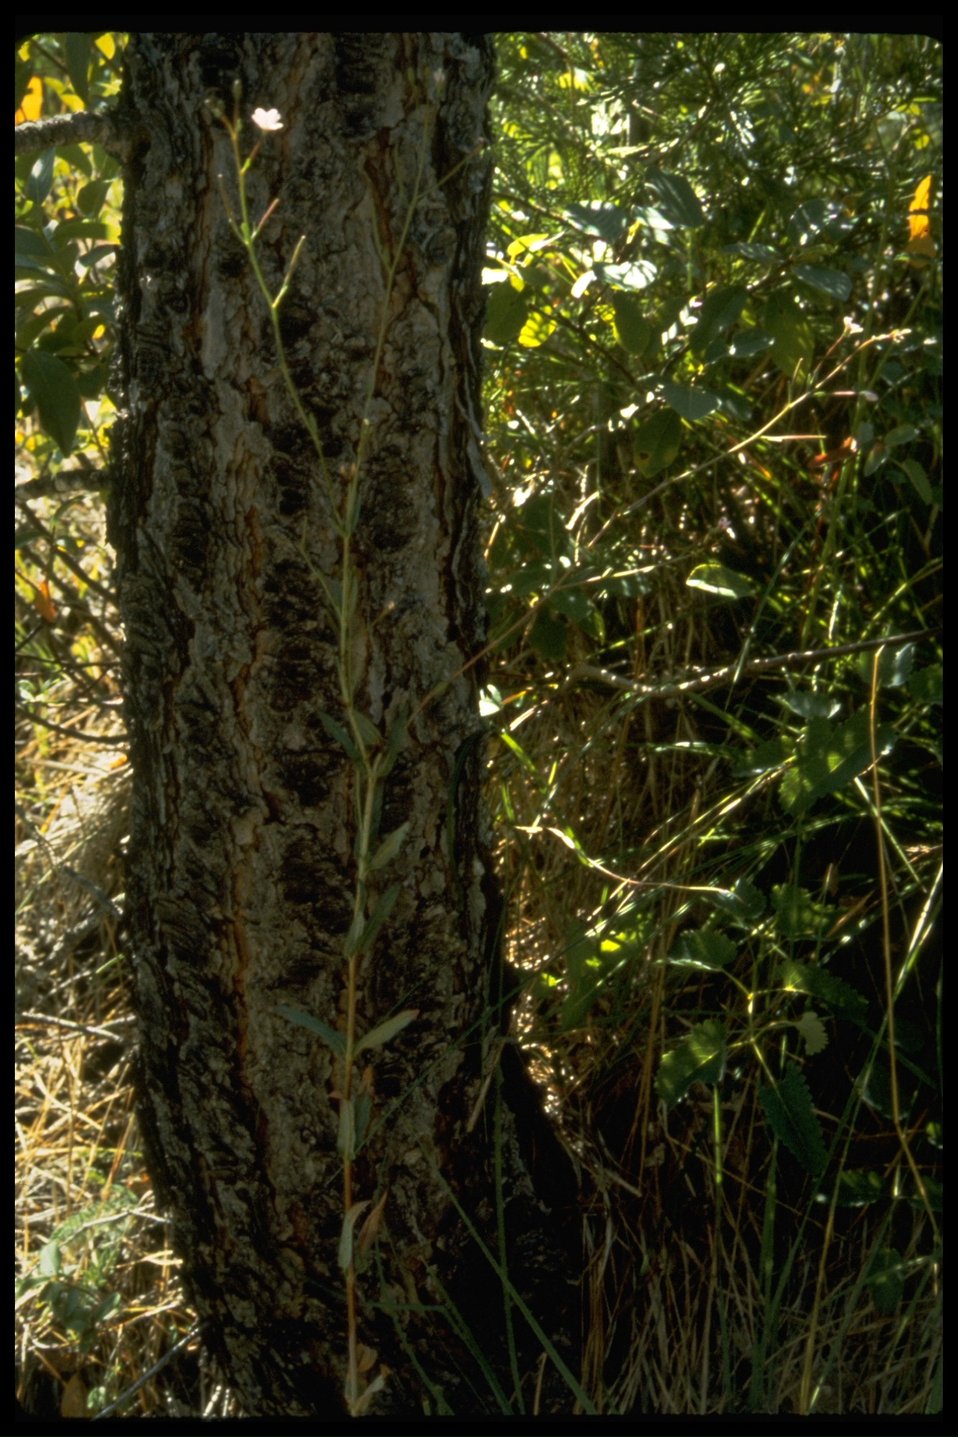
Epilobium oreganum, commonly known as the Oregon willow-herb.